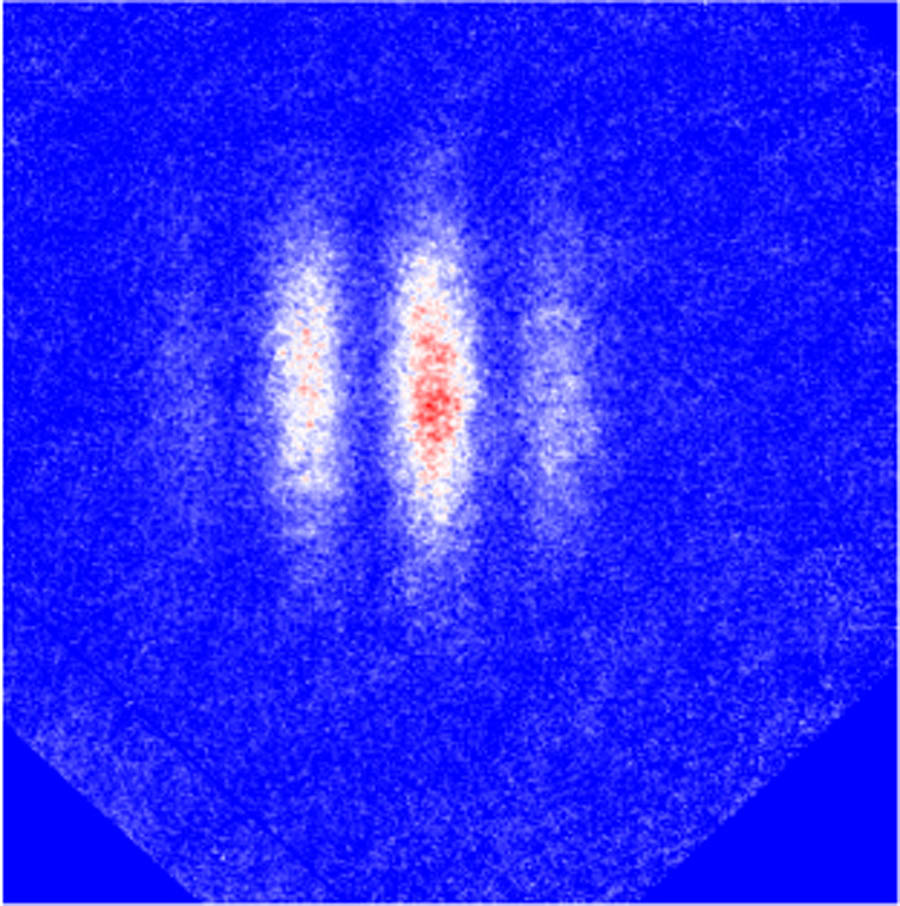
NIST Atom Interferometry Displays New Quantum Tricks

Atoms interfering with themselves. After ultracold atoms are maneuvered into superpositions--each one located in two places simultaneously--they are released to allow interference of each atom's two 'selves.' They are then illuminated with light, which casts a shadow, revealing a characteristic interference pattern, with red representing higher atom density. The variations in density are caused by the alternating constructive and destructive interference between the two 'parts' of each atom, magnified by thousands of atoms acting in unison.